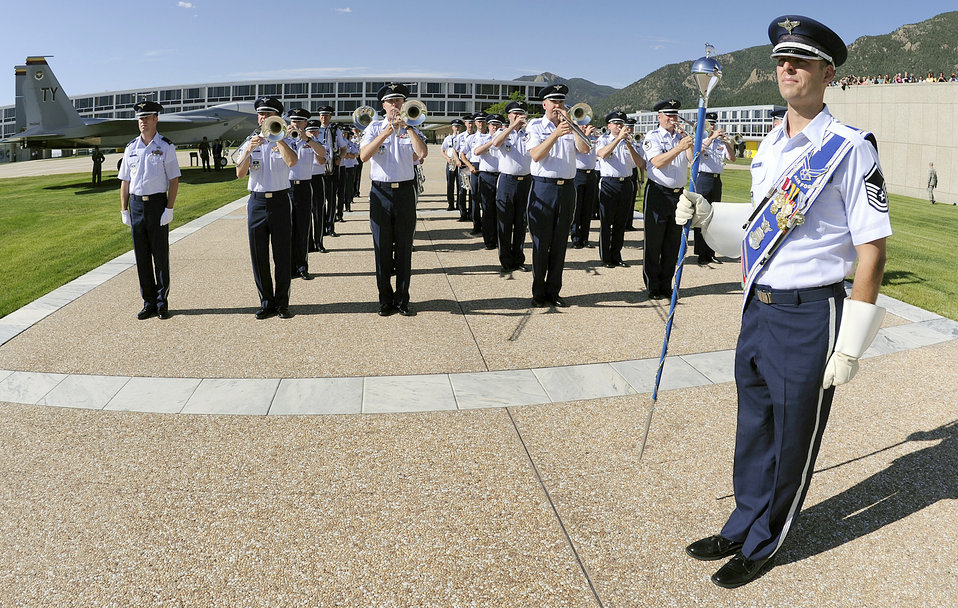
Air Force Academy's Class of 2014

The U.S. Air Force Academy Band performs for the Class of 2014 swearing-in ceremony June 25, 2010, at the U.S. Air Force Academy, in Colorado Springs, Colo.